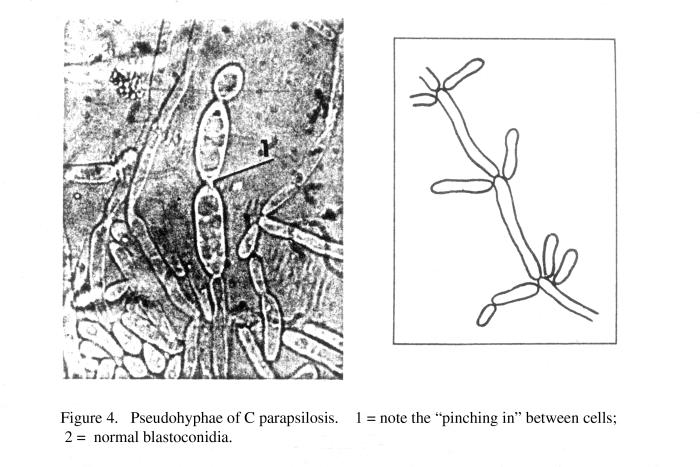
This illustration revealed the ultrastructural morphology displayed by the pseudohyphae of Candida parapsilosis fungal organisms.